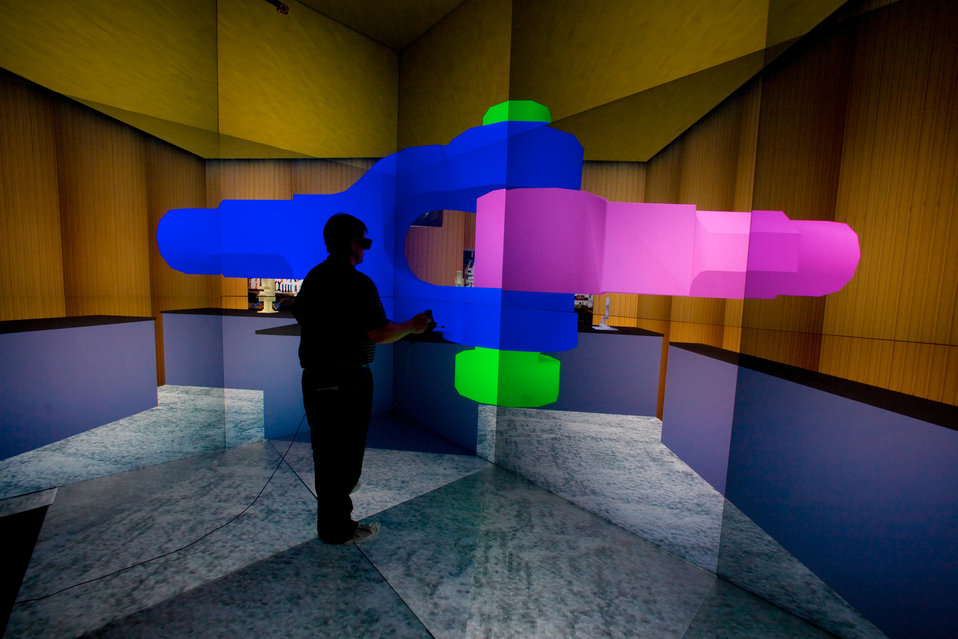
AT LOS ALAMOS NATIONAL LABORATORY, A USER INTERACTIVELY ASSEMBLES A MECHANICAL JOINT INSIDE A VIRTUAL ENVIRONMENT IN THE CAVE.

In the CAVE, the glasses and hand-held wand are motion tracked to allow free movement of objects within the virtual world. This capability allows designers to test and validate design options, create and verify safety plans and provide training experience for workers. Over the past several years, Los Alamos National Laboratory has invested in providing state-of-the art facilities and software tools to help scientists in the Advanced Simulation and Computing (ASC) program understand and explore their data.